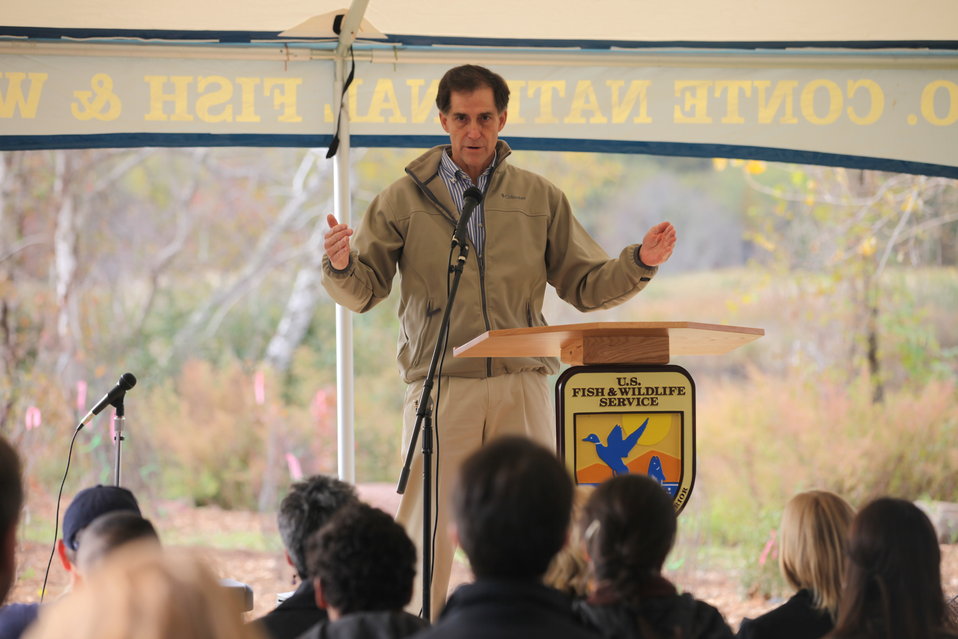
U.S. Fish and Wildlife Service Director Dan Ashe addresses partners, school students, and local neighborhood groups at the New Haven Harbor Watershed Urban Wildlife Refuge Partnership designation.